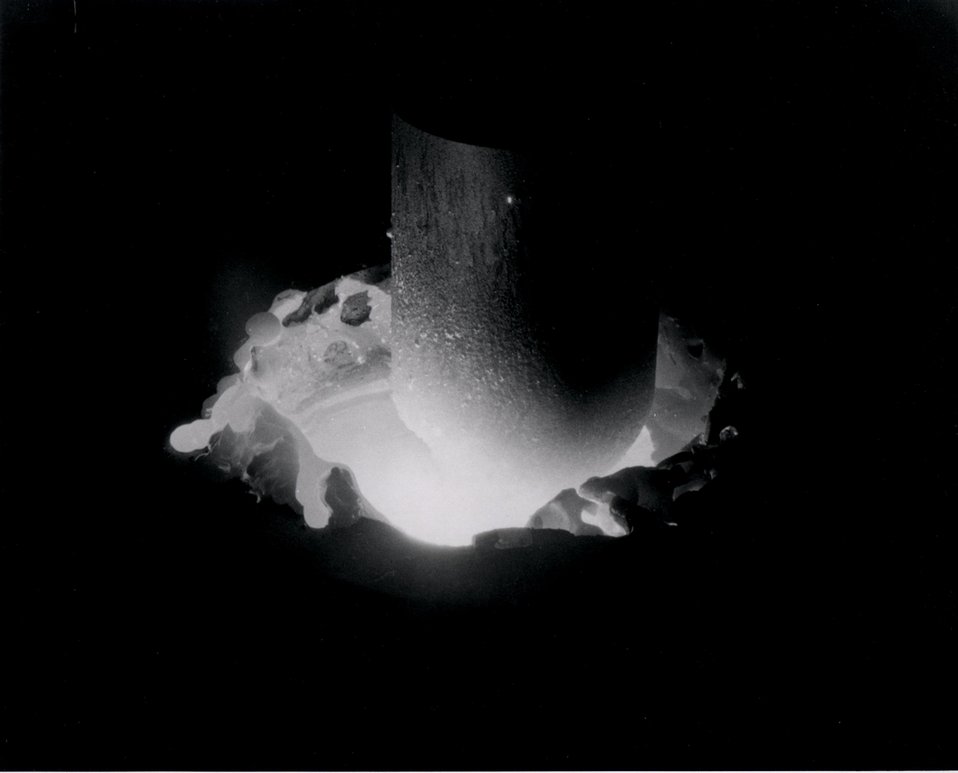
Fabrication of Uranium Carbide Fuel Elements: Arc melting in progress. c. 1964